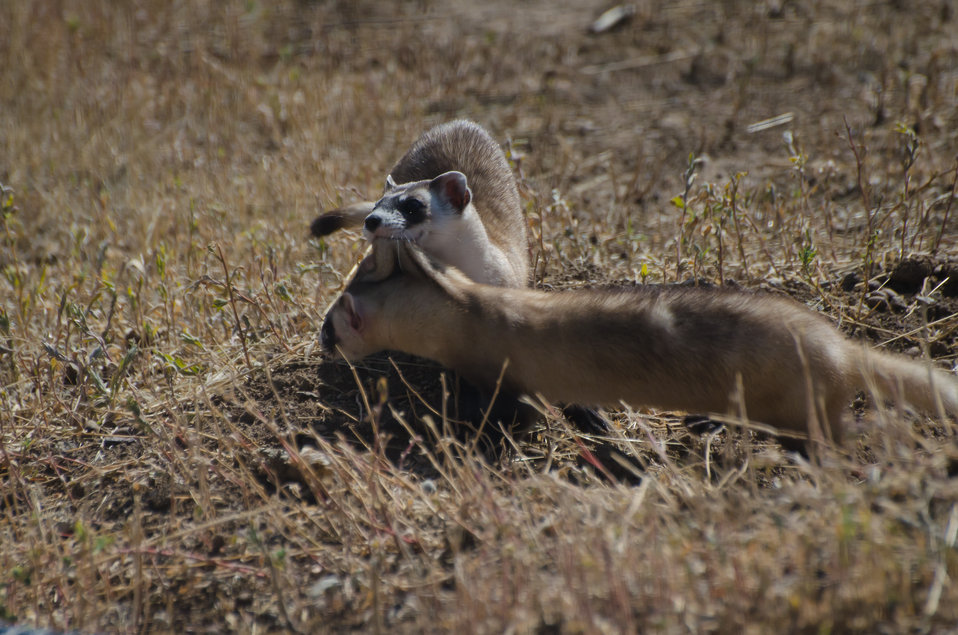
Black-footed Ferret Mother & Kit

During the visit, Hannah witnessed a black-footed ferret mother move its kit by the scruff of its neck.